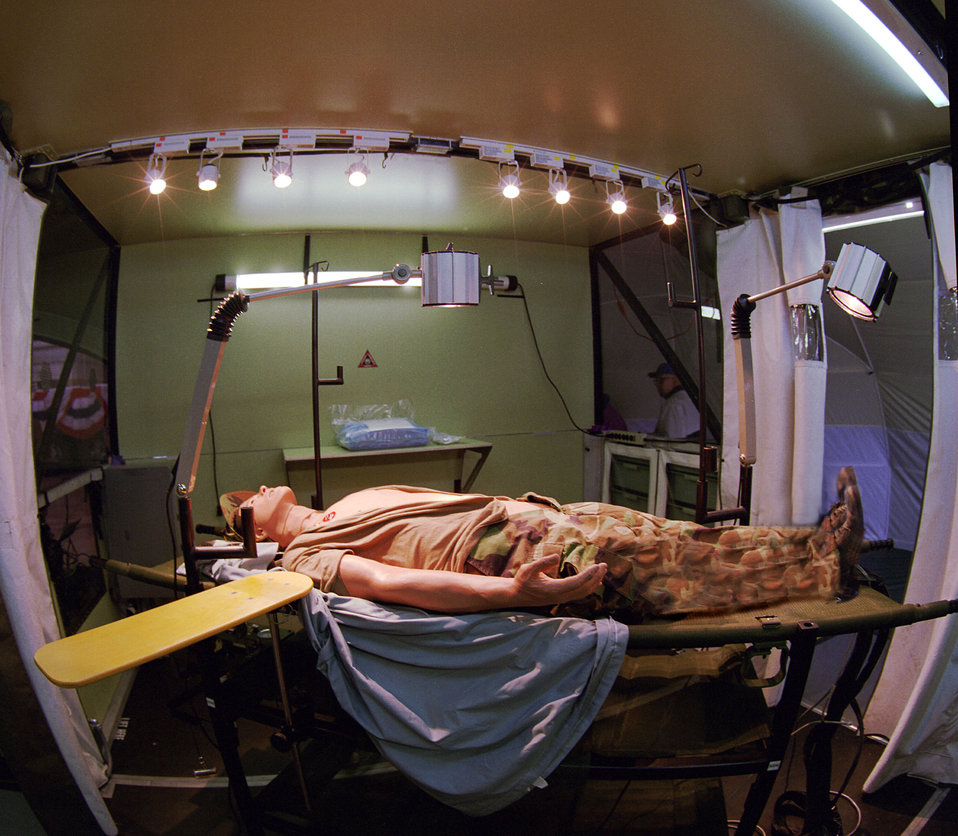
Hospital in a Box Tennessee Air National at McGhee Tyson Airport Knoxville

97-496 DOE photo by Lynn Freeny

Hospital in a Box Tennessee Air National at McGhee Tyson Airport Knoxville Tennessee 10-25-1997